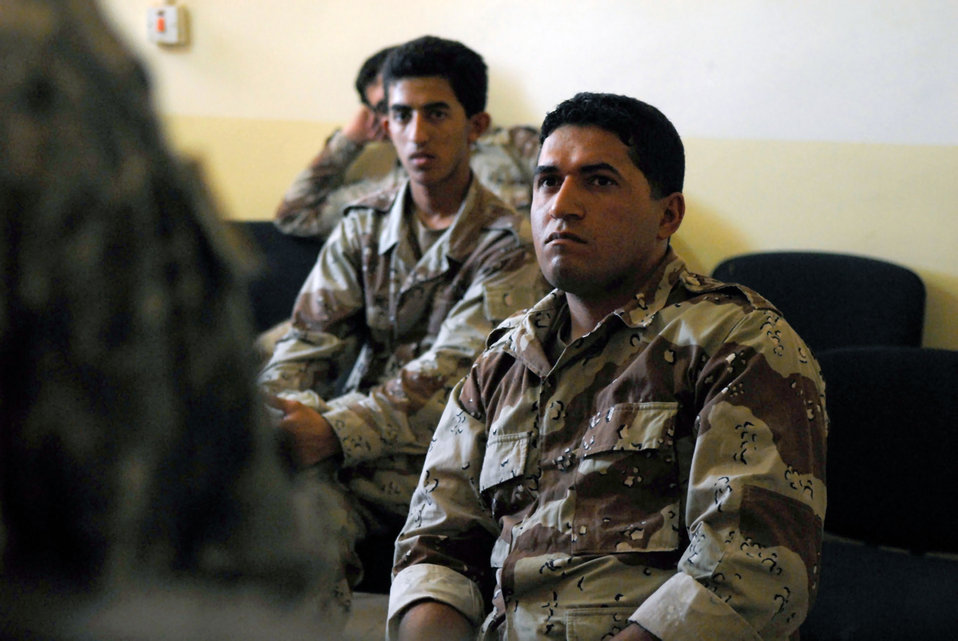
Airmen help Iraqi air force become self-sustaining service

Iraqi air force aerial gunner trainees listen in as an interpreter relays the message of the instructor May 29 at Camp Taji, Iraq. With the assistance of a translator and hand gestures, this obstacle is overcome to ensure the correct message is relayed and understood by the trainees.